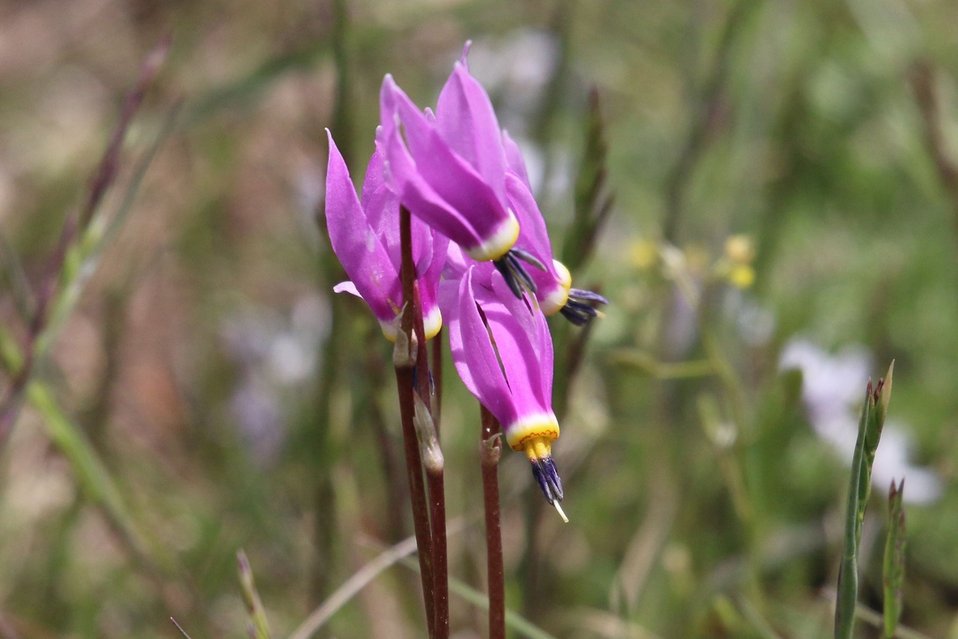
A Delicate Beauty

Shooting stars aren't only visible at night. It's also one of the common names for Dodecatheon, this little spring gem that blooms on the National Elk Refuge.

Credit: USFWS / Ann Hough, National Elk Refuge volunteer